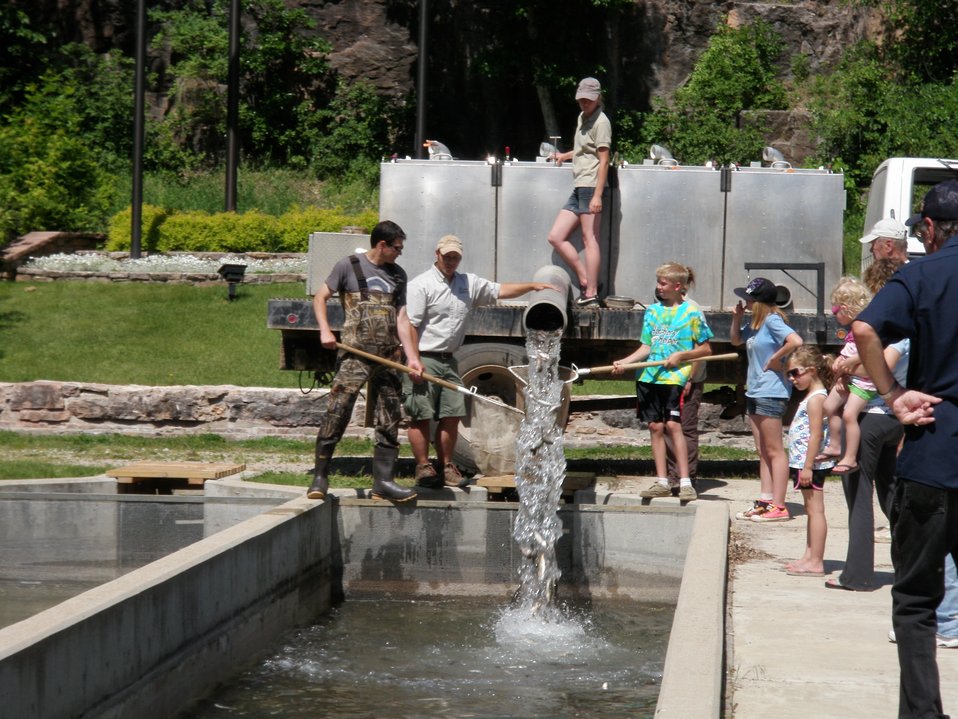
Hatchery Helpers eagerly helped prepare the raceways for an incoming shipment of trout, and were all hands on deck when the trout arrived.